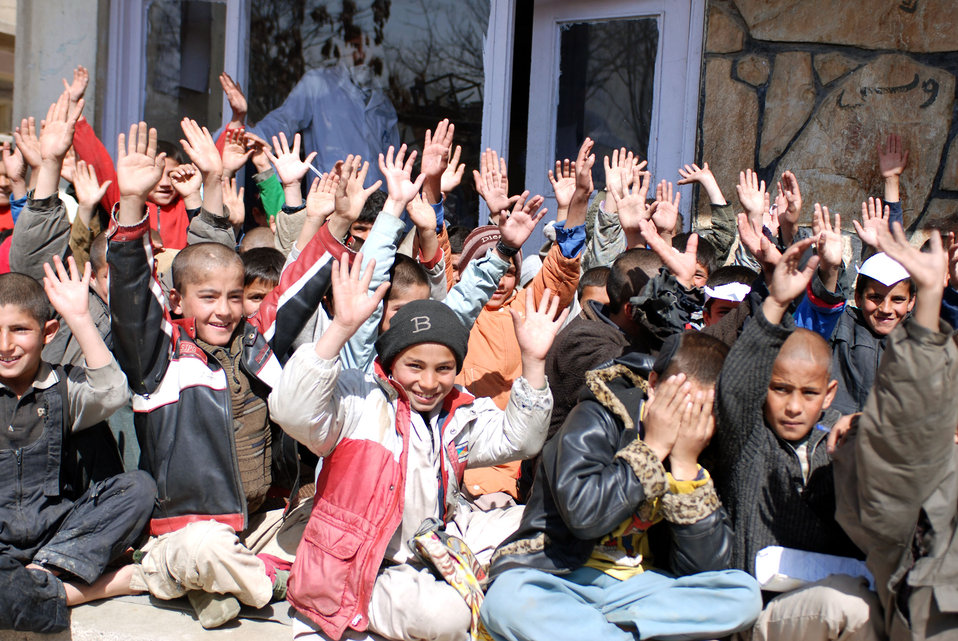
Afghan children get geared up for school

Afghan children from a school in downtown Kabul, Afghanistan., cheer on coalition forces carrying school supplies March 8 into the school yard during a recent community relations trip. Volunteers from the Combined Security Transistion Command were a part of this coalition-sponsored visit.